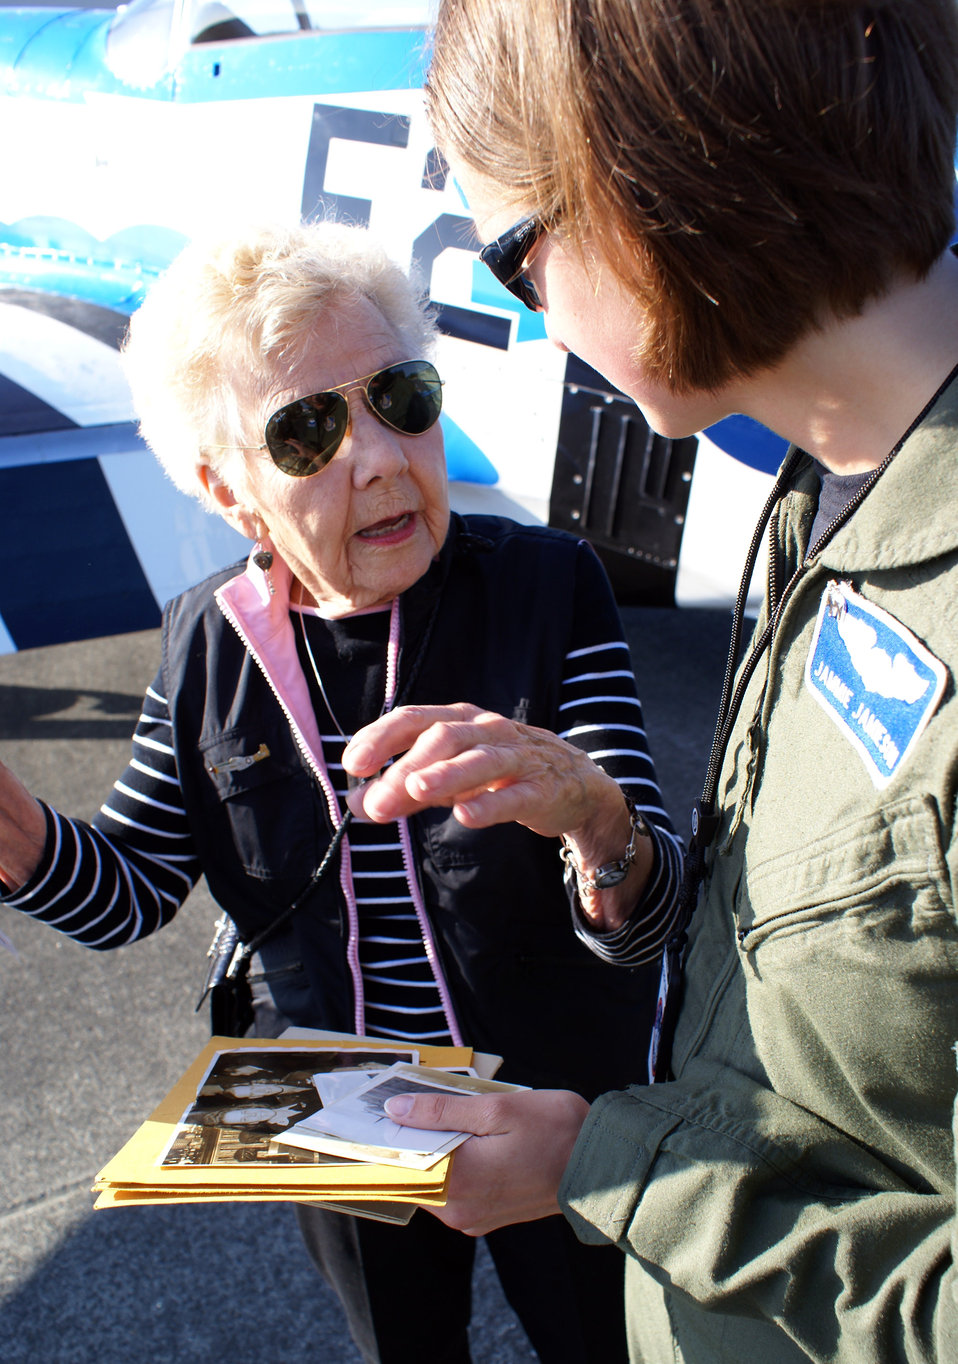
Female pioneers of military aviation gather at McChord

Dorothy Olsen meets with Capt. Jammie Jamieson during the July 20 airshow at McChord Air Force Base, Wash. Captain Jamieson, currently stationed at Elmendorf Air Force Base, Alaska, is the mobility flight commander for the 525th Fighter Squadron. She is the first operational and combat-ready female F-22 Raptor pilot. Ms. Olsen is a former member of the Women Airforce Service Pilots.